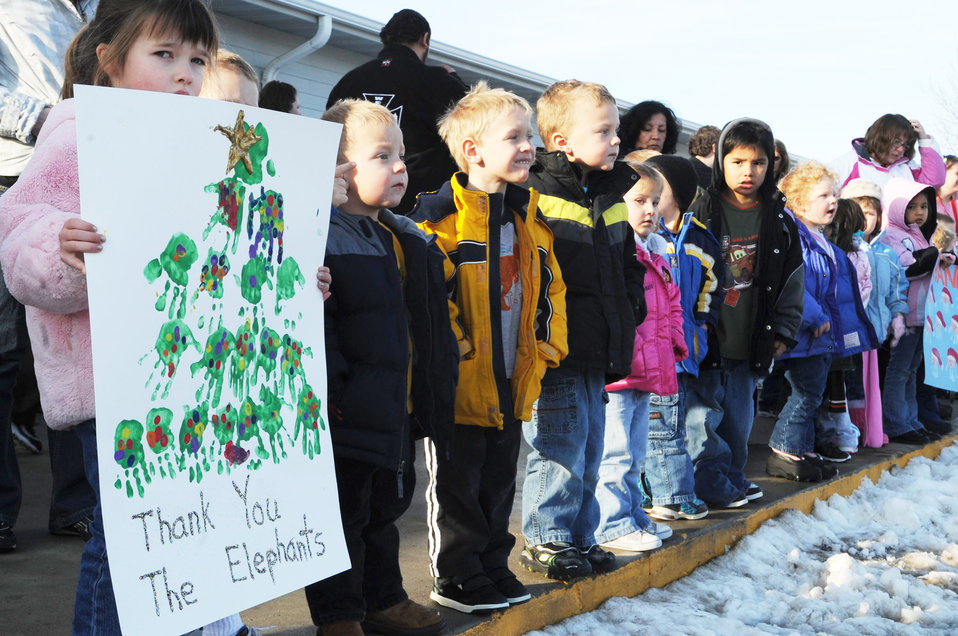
Ellsworth members support Angel Tree program

Children of the Youth and Family Services child care center wait for Santa and Mrs. Claus' arrival Dec. 17, 2009, in Rapid City, S.D. This is the third time Santa, Mrs. Claus and Airmen from Ellsworth Air Force Base, S.D., bought, wrapped and delivered gifts for every child at the center.